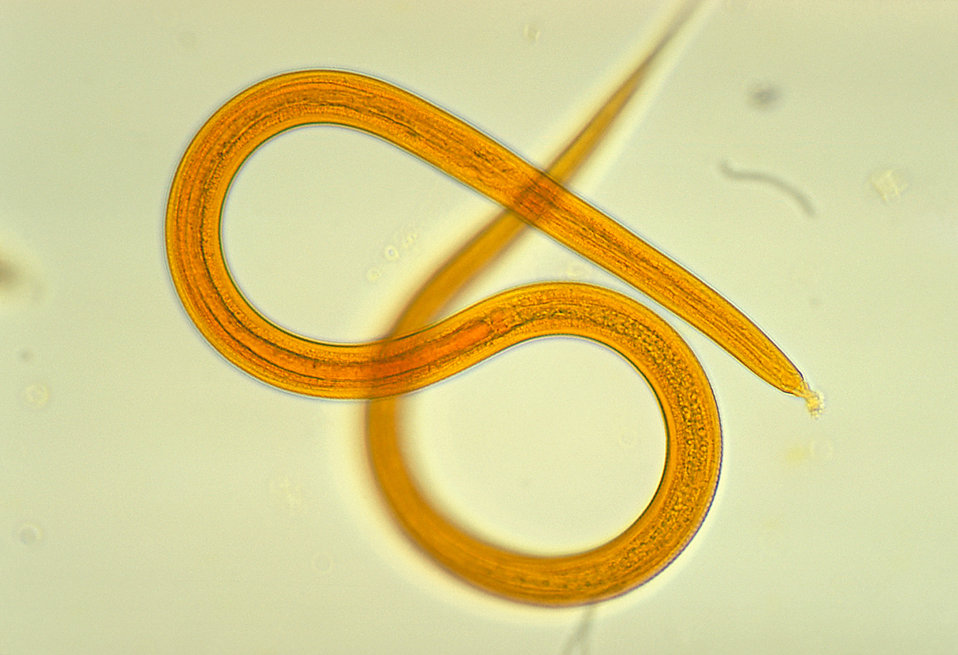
Strongyloides filariform larva.